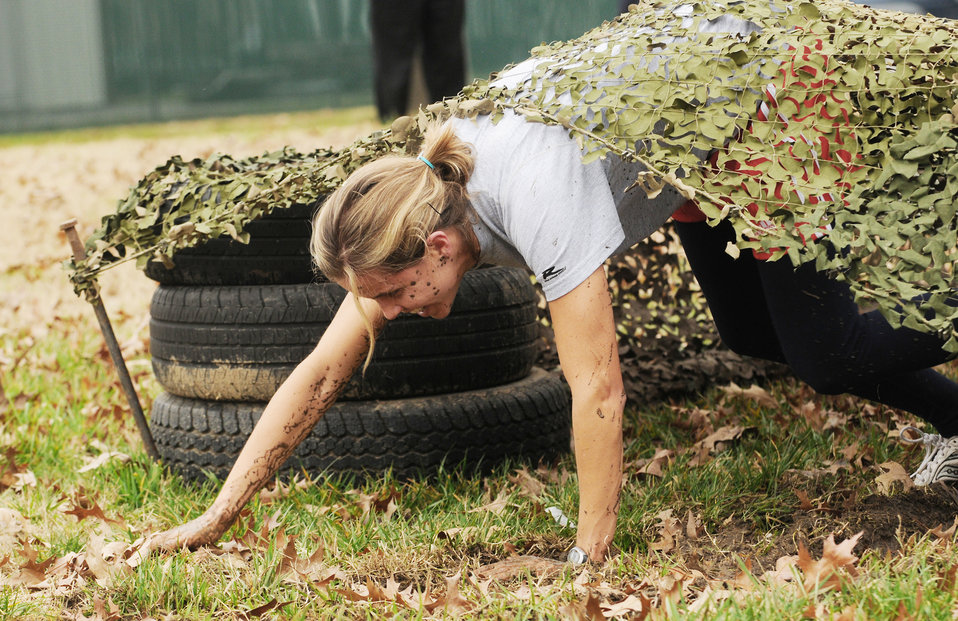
Bolling members take 'Amazing Race' challenge

Team Black member Adrienne Mason crawls out of the low-crawl obstacle during an obstacle course competition Dec. 4, 2009 on Bolling Air Force Base, D.C.